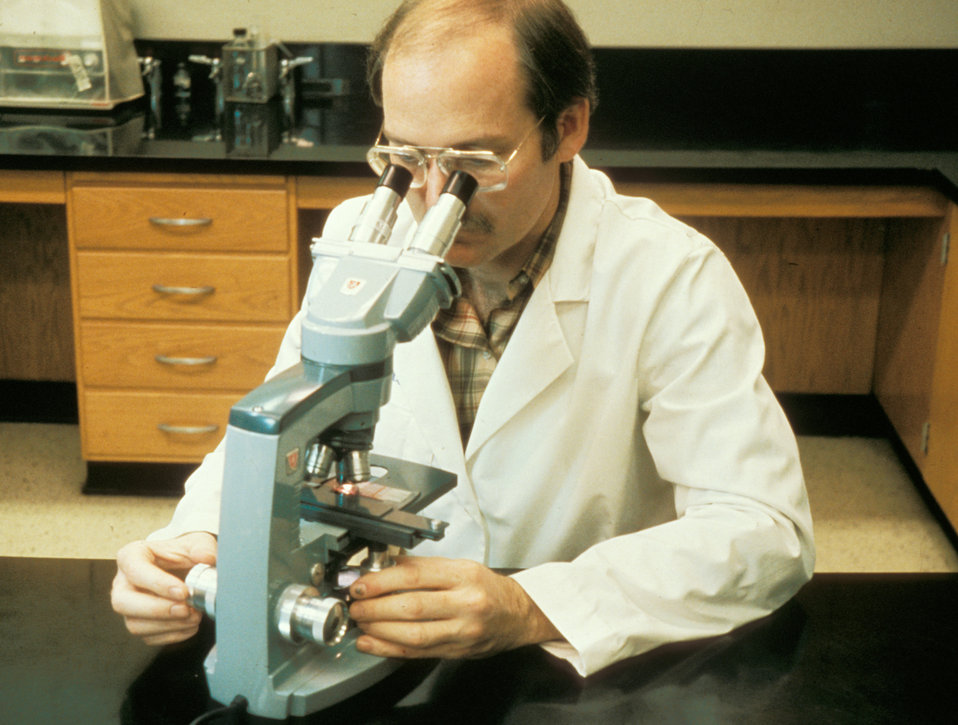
This was Joseph E. McDade, Ph.D., CDC epidemiologist using a transmission light microscope during a scientific investigation.